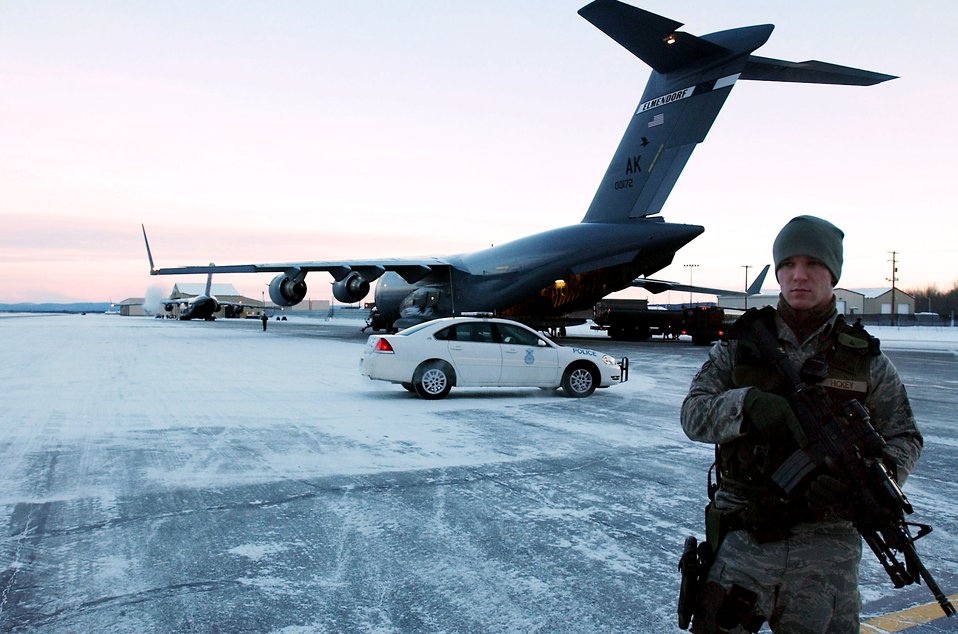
Air Force, Army forces join to support exercise

Senior Airman Brad Hickey stands guard in below-zero temperatures, providing security for a C-17 Globemaster III on the ramp at Eielson Air Force Base, Alaska, that is scheduled to transport Soldiers and equipment from the Army's First Stryker Brigade at Fort Wainwright, Alaska, to South Korea in support of a Foal Eagle exercise. Airman Hickey is with the 354th Security Forces Squadron at Eielson. The C-17 and its crew are from the 517th Airlift Squadron, Elmendorf AFB, Alaska.